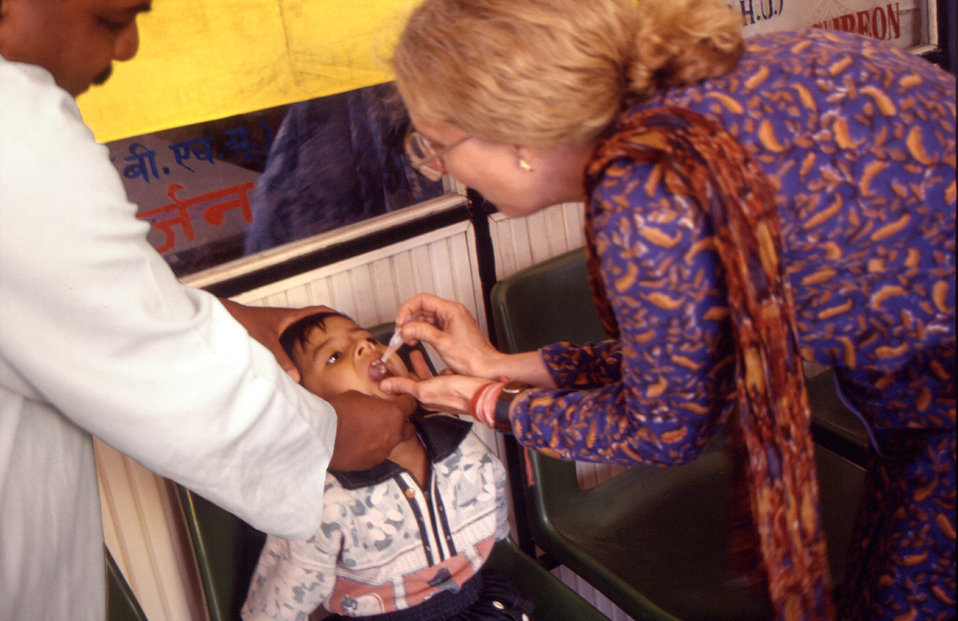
This 2000 photograph depicted STOP Transmission of Polio (STOP) team member Christine Zahniser, B.S.N., R.N., M.P.H., as she was administering an oral polio vaccine to a child under 5 years of age, during a National Immunization Day (NID) in India. Thousands of children throughout the country receive a polio vaccine on each NID. Since its inception in the fall of 1998, the STOP immunization initiative teams have worked in over 50 countries. In the first years of the program, most STOP team members worked primarily to bolster acute flaccid paralysis (AFP) surveillance, support 'national immunization' days, and conduct polio case investigation and follow-up.